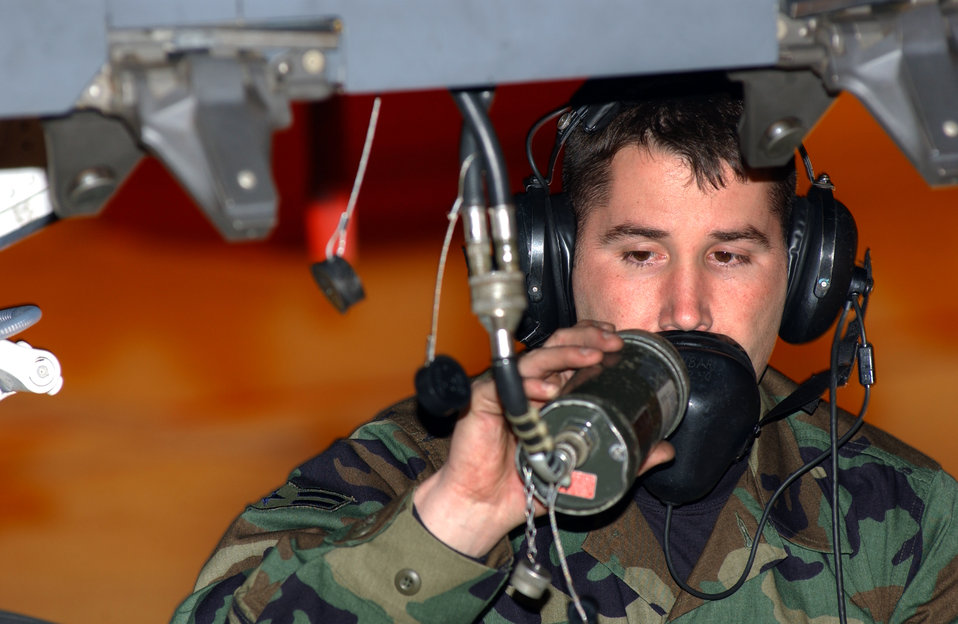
Calling the cart

ROYAL AIR FORCE LAKENHEATH, England -- Airman 1st Class Shane Law checks a BRU-47 bomb rack April 7 during a weapons training exercise. Airman Law is an aircraft armament systems apprentice with the 48th Aircraft Maintenance Squadron. The 48th AMXS is a worldwide-deployable unit which inspects, generates and maintains 82 F-15 Eagle aircraft.